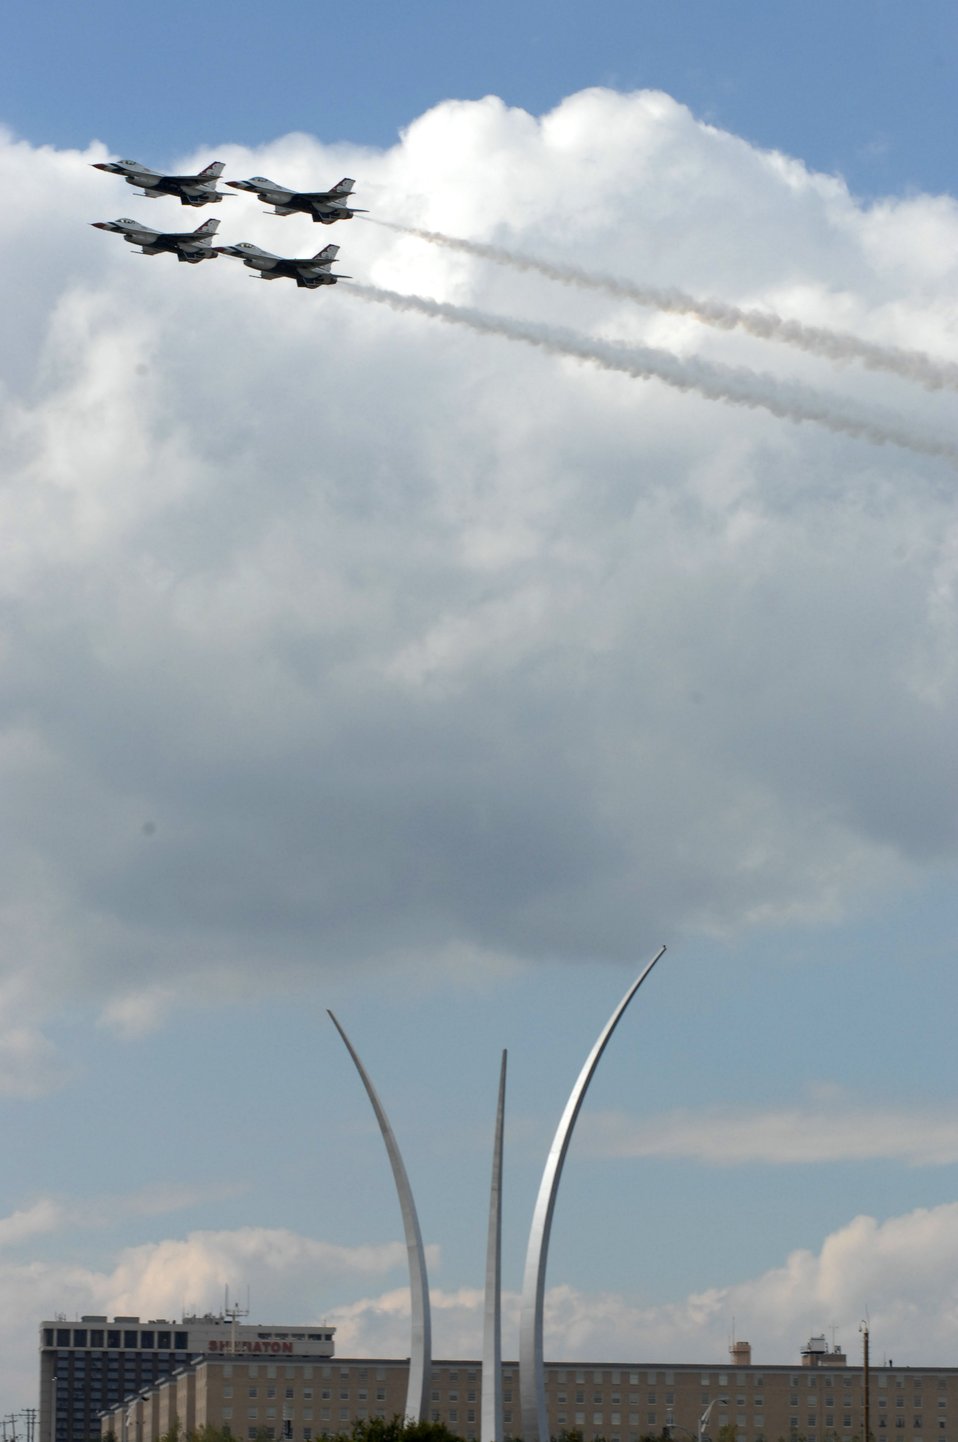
Thunderbirds practice over Air Force Memorial

The Air Force Thunderbirds demonstration team fly over the Air Force Memorial Oct. 12 in a practice for the Oct. 14 opening ceremonies for the memorial.